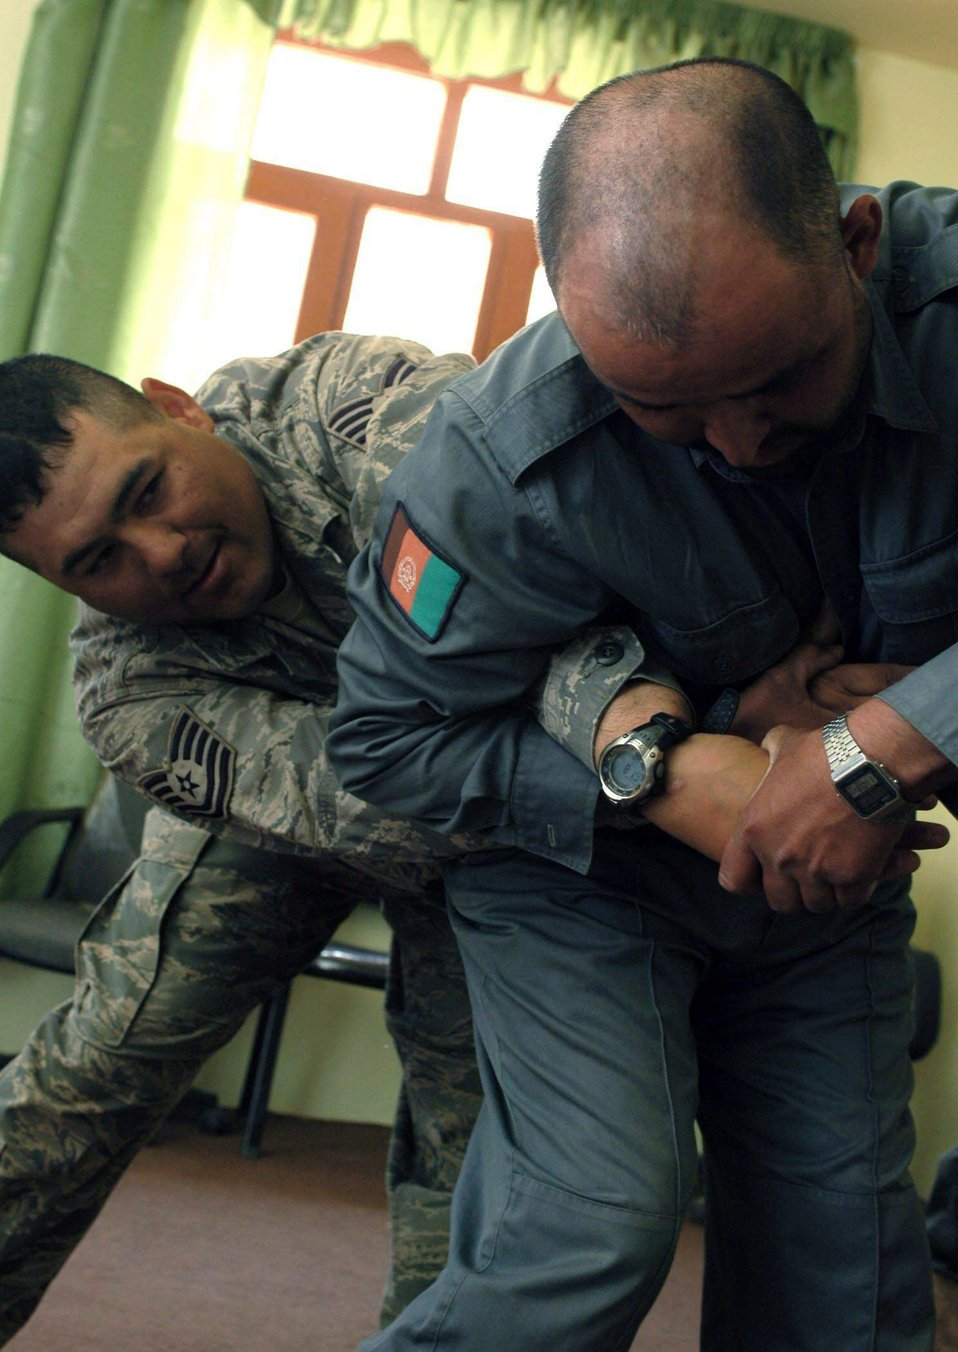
Airmen help Afgahnistan National Police hone skills

Tech. Sgt. Chris Padron demonstrates a restraint technique for a member of the Afgahnistan National Police as part of a training class held May 8 at Dandar village, in the Parwan province of Afghanistan. Access to resource control was also taught during the training. Sergeant Padron is a Provincial Reconstruction Team member deployed from Cannon Air Force Base, N.M.